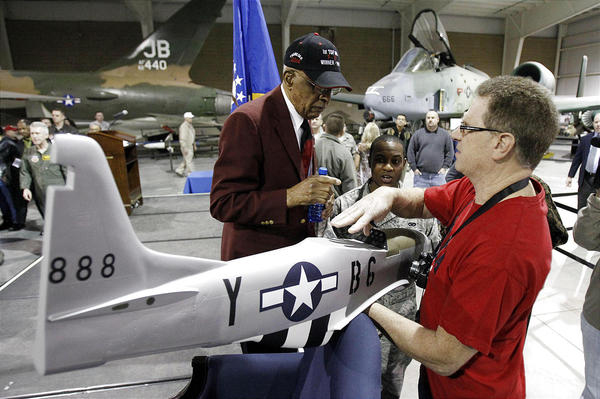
Lt. Col. James Harvey, won early weapons competition as Tuskegee Airman.